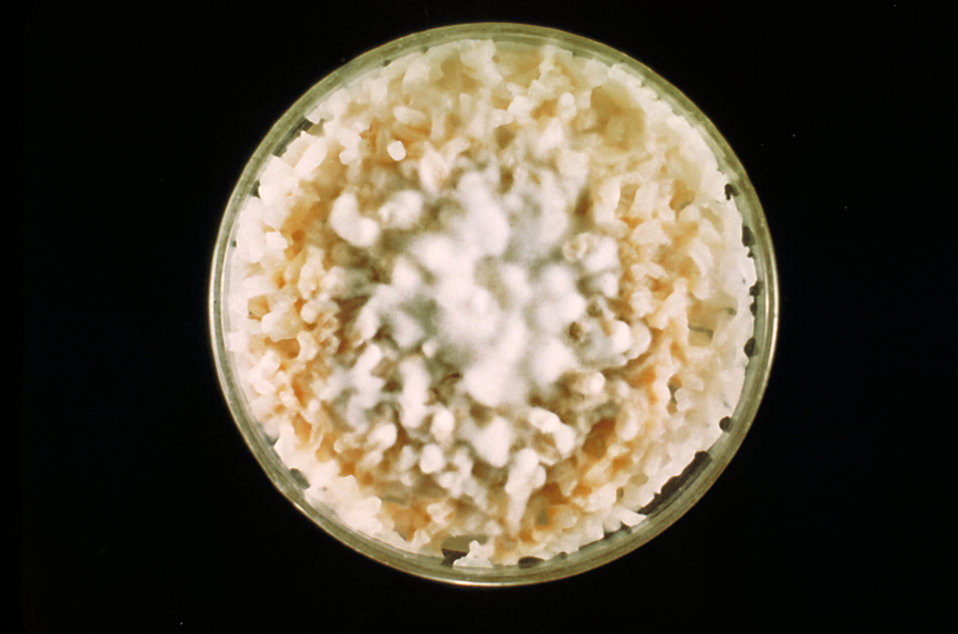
This image shows a culture of Microsporum canis fungi growing on boiled polished rice grains.